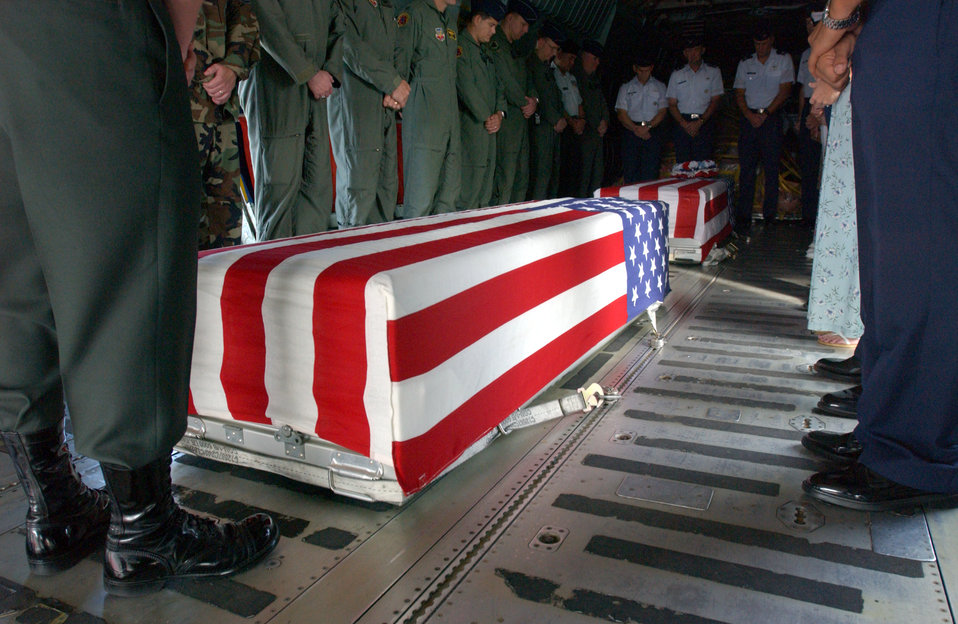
Airmen pay respect during repatriation ceremony

ANDERSEN AIR FORCE BASE, Guam -- People here honor two servicemembers who died during the Vietnam War. The remains rested in the Hanoi Taxi, which became the first C-141 Starlifter to repatriate American prisoners of war from Vietnam on Feb. 12, 1973.